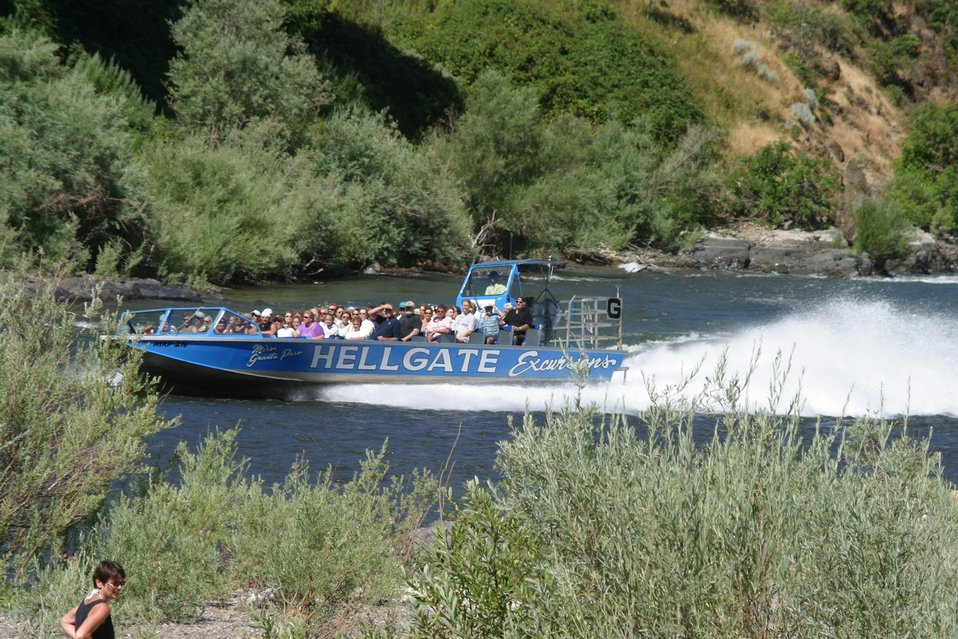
Jet boat pass Hog Creek.